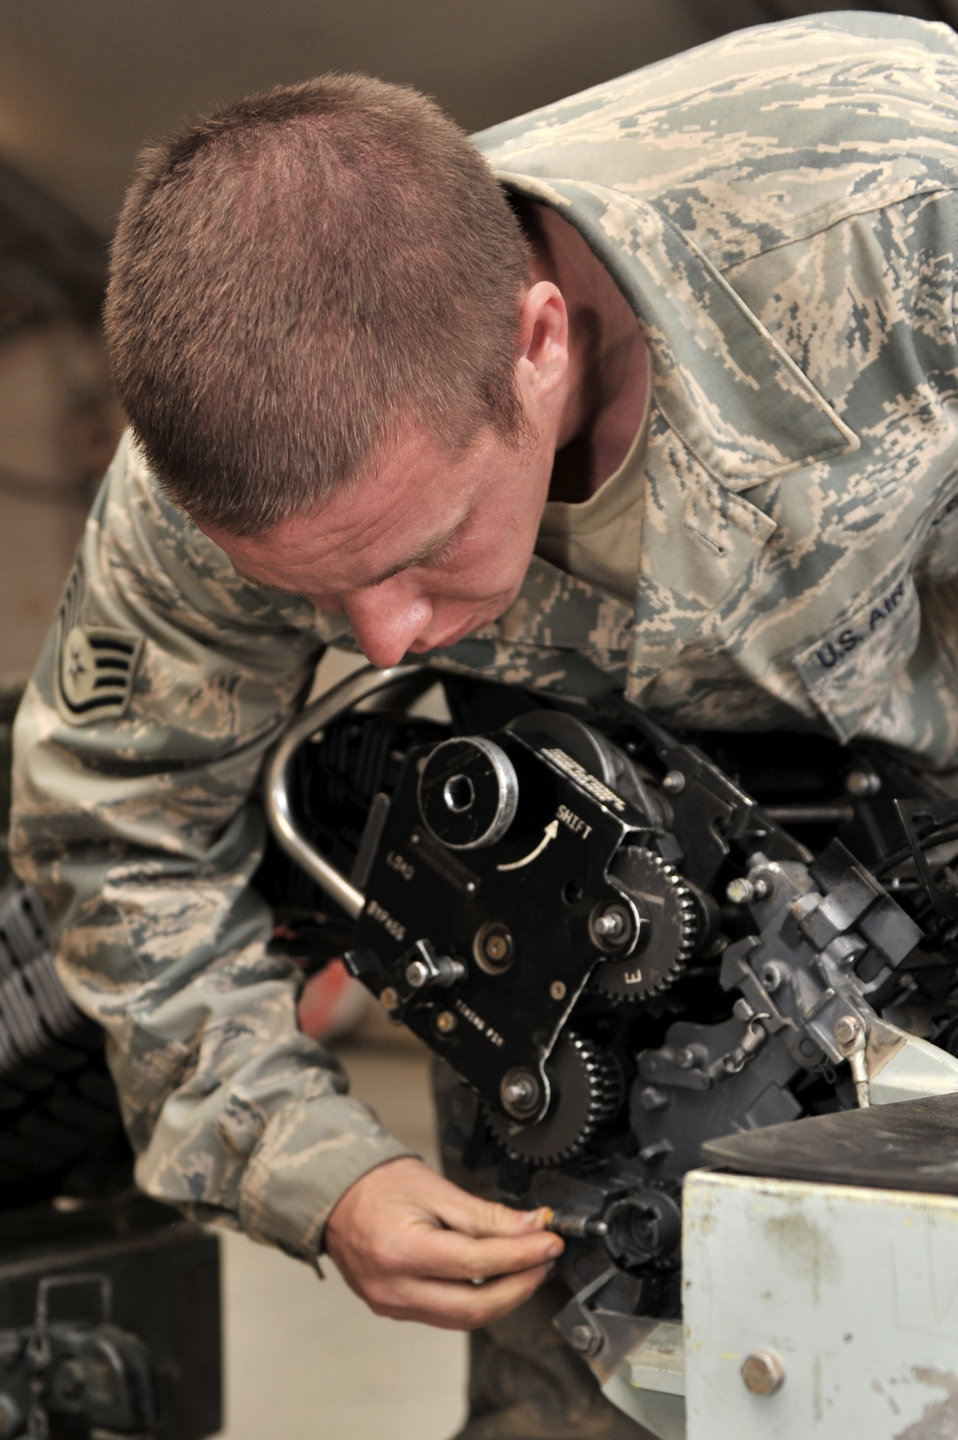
Ammo airmen supply the fight

Staff Sgt. Glen Vart connects a linkless ammunition loading system to a replenisher table March 23, 2011, at Bagram Airfield, Afghanistan. The loading system allows cycling of 20 millimeter rounds for inventory and inspection. Sergeant Vart is an ammunition supply point technician assigned to the 455th Expeditionary Maintenance Squadron.